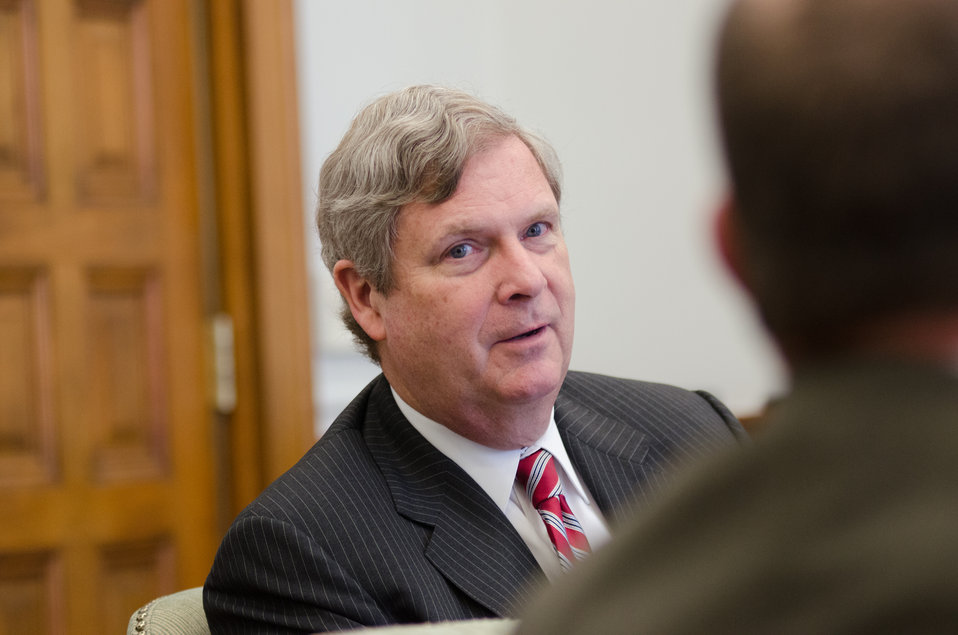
U.S. Department of Agriculture (USDA) Secretary Tom Vilsack, left, talks with Office of Ethics Branch Chief Ed Peterman, during a Brown Bag Lunch that the Secretary periodically has with employees, in his conference room, on Tuesday, April 9, 2013, in Washington, D.C.